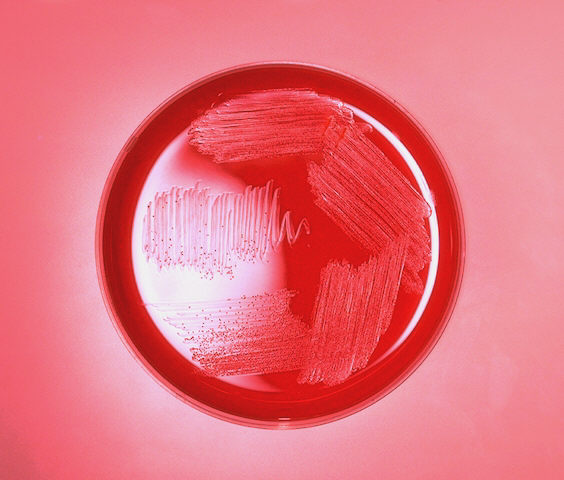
Blood agar plate culture of Haemophilus parahaemolyticus.